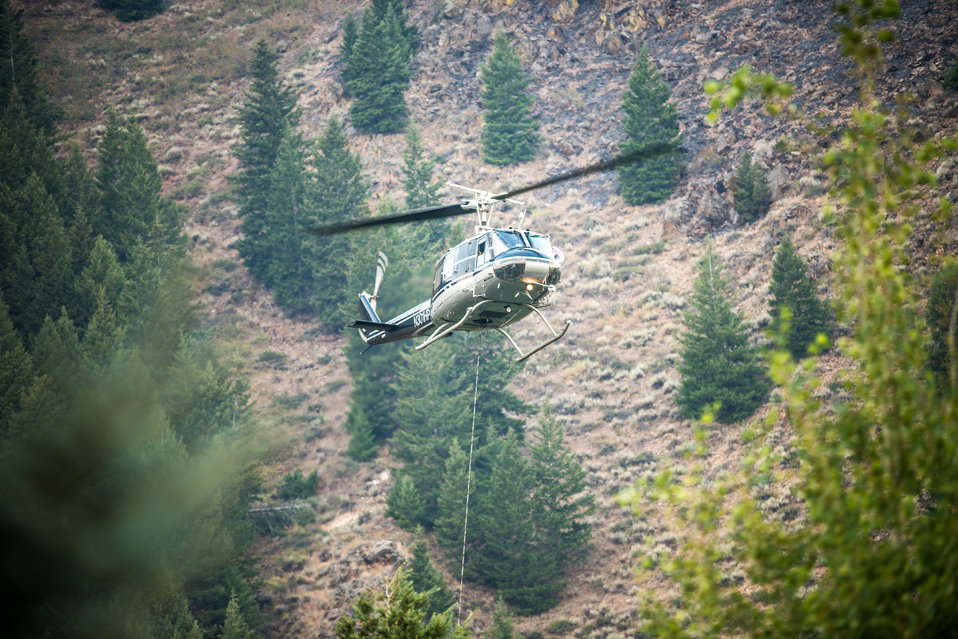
A Bell UH-1H helicopter lifts a full Bambi Bucket, a collapsible bucket utilizing a pilot-controlled release valve, that is able to deliver a concentrated column of water from the helicopter to the fire on the Carbonate Ridge, rising behind the Wood River, during Beaver Creek Fire, west of Hailey, ID, on Monday, Aug 19, 2013.